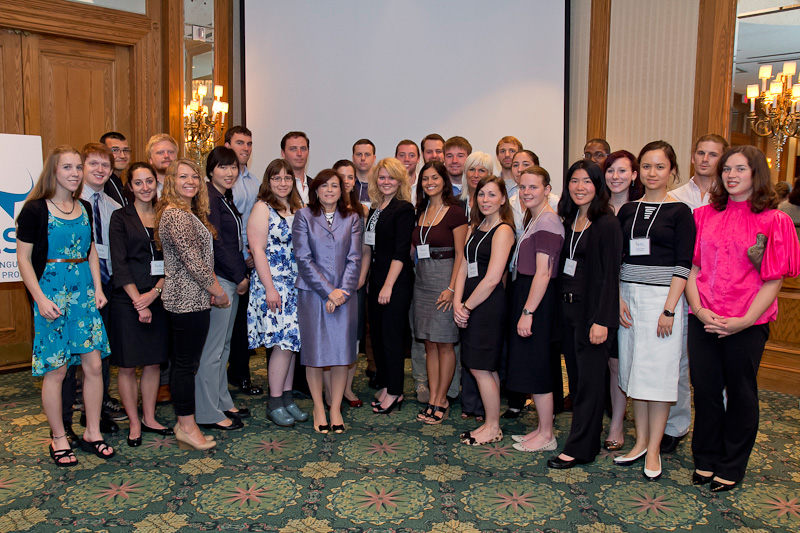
Under Secretary Sonenshine With Critical Language Scholarship Students (Russian)

Under Secretary of State for Public Diplomacy and Public Affairs Tara Sonenshine speaks with Critical Language Scholarship (CLS) students studying Russian at a conference in Washington, D.C., June 20, 2012.